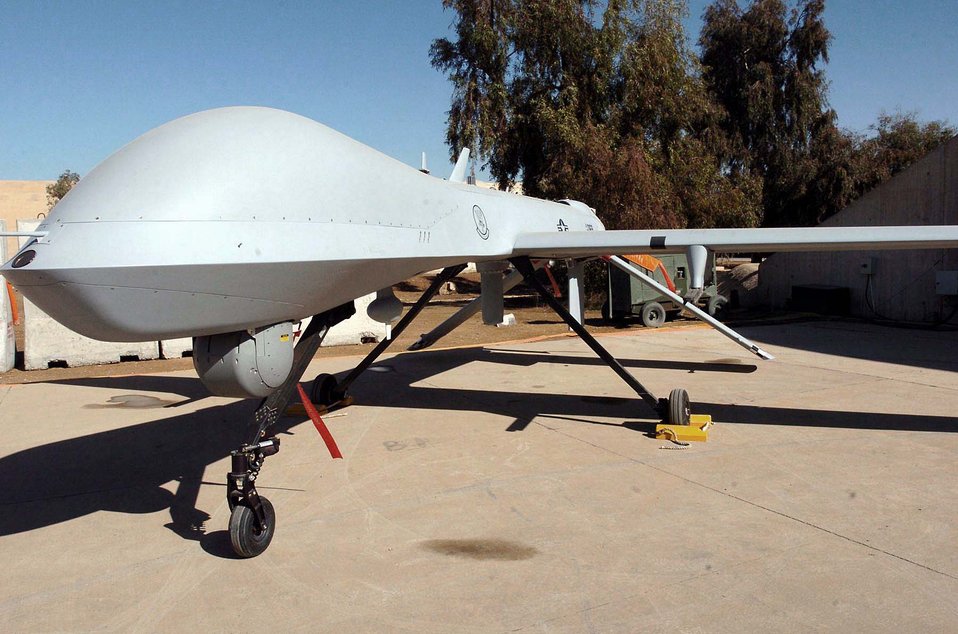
Predators protect troops

BALAD AIR BASE, Iraq -- The RQ/MQ-1 Predator unmanned aerial vehicle is a lightweight, low horsepower aircraft capable of flying more than 20 hours of intelligence, reconnaissance and surveillance missions, helping protect ground troops in Iraq.